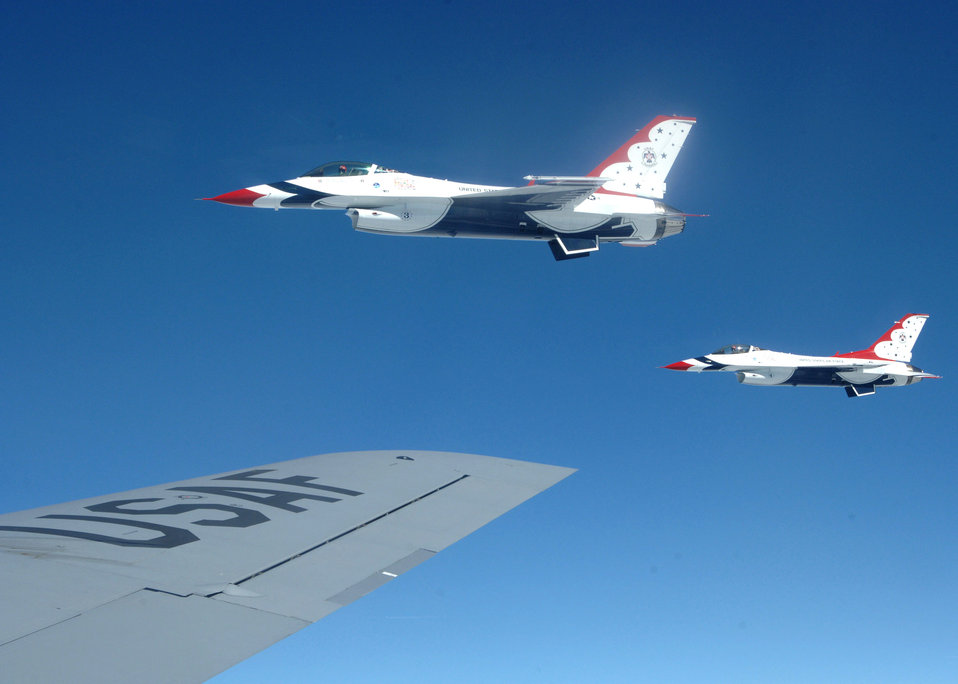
Refueling Thunderbirds

Air Force Thunderbirds fly over the Midwestern United States during an air refueling mission Oct. 1. The Thunderbirds are the Air Force's premier demonstration squadron. The F-16 Fighting Falcon team represents the Air Force throughout the nation and abroad.